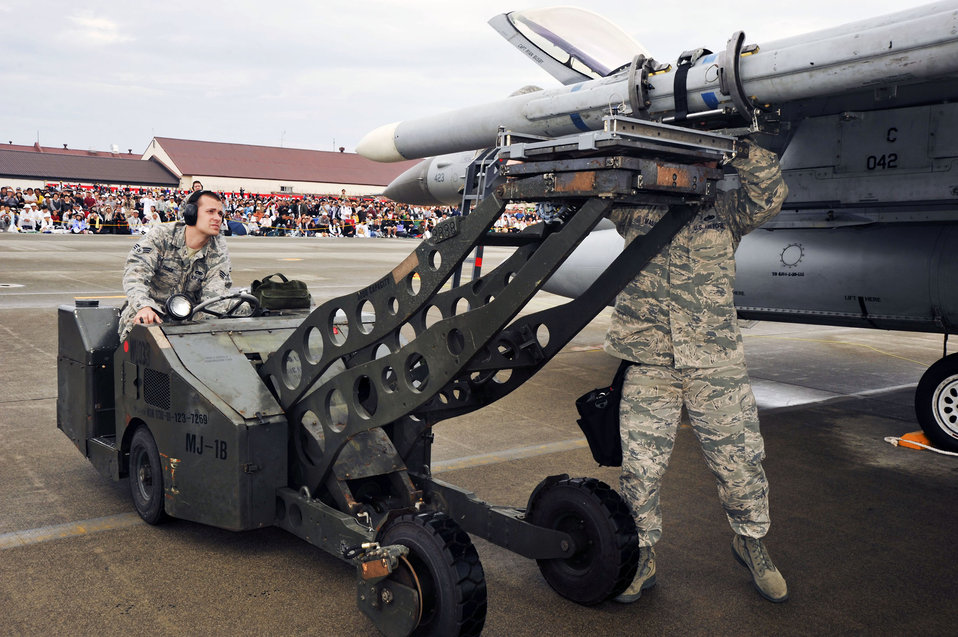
Misawa Air Festival

Senior Airman Benjamin Fisher (left) and Staff Sgt. William Massey load munitions onto an F-16 Flying Falcon during a weapons loading demonstration at the Misawa Air Festival Sept. 19, 2010, at Misawa Air Base, Japan. Sergeant Massey and Airmen Fisher are both assigned to the 35th Maintenance Operations Squadron.